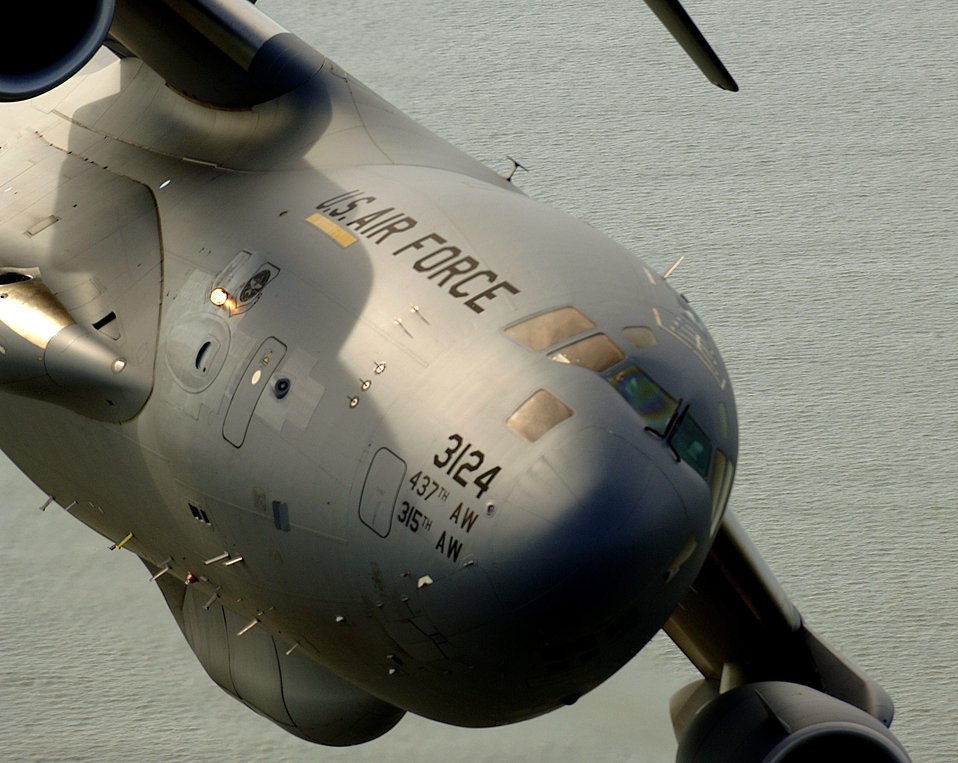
C-17s over Charleston

A C-17 Globemaster III from the 14th Airlift Squadron, Charleston Air Force Base, S.C., banks over the Atlantic Ocean while on a local training mission, May 16, 2006.